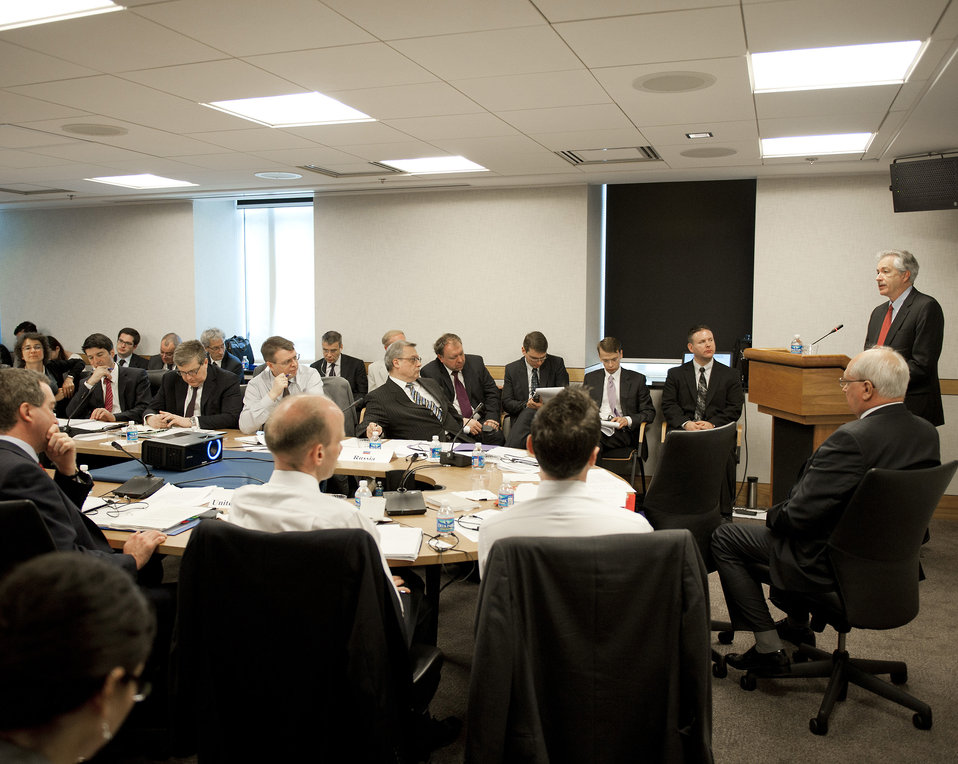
Deputy Secretary Burns Addressed the P5 Conference

Deputy Secretary of State William J. Burns addresses delegations from China, France, Russia, and the United Kingdom during the P5 Conference held at the U.S. Department of State in Washington, D.C., on June 28, 2012.